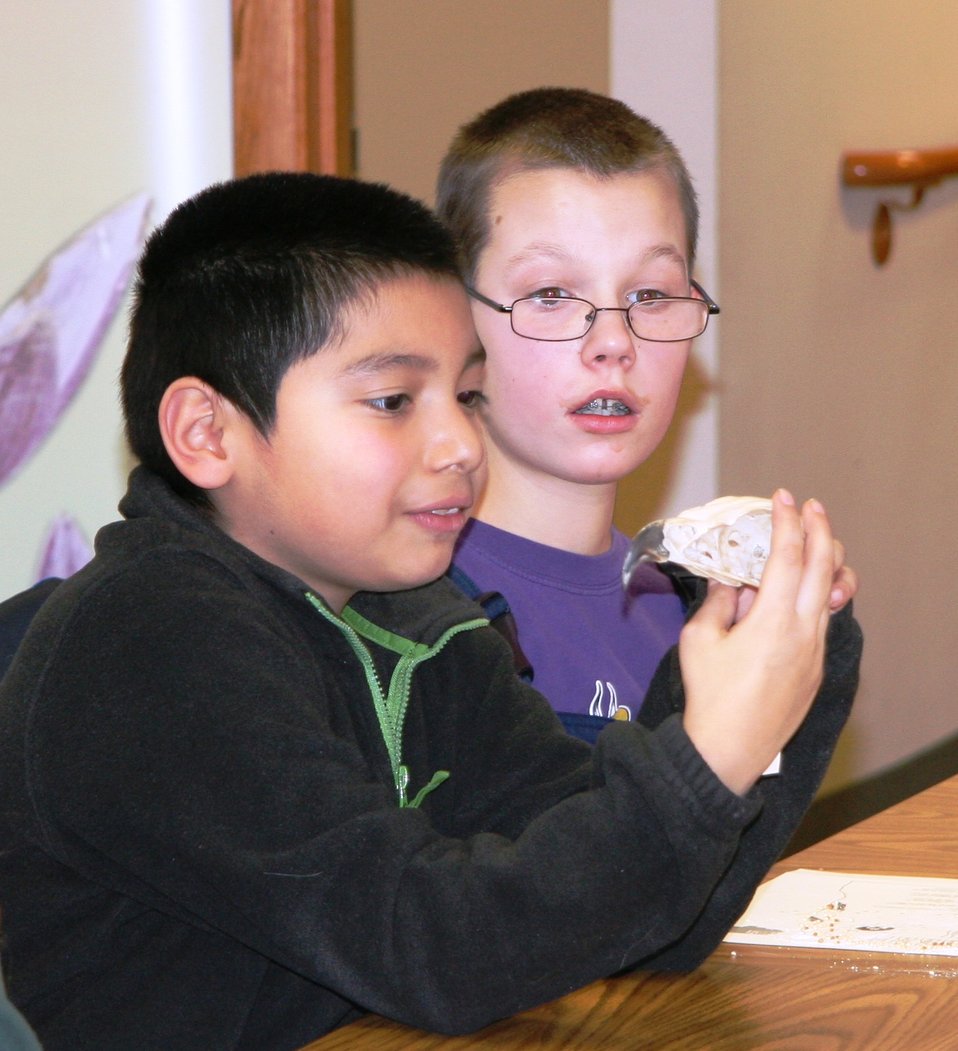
Checking out an Eagle Skull

Two young boys check out a museum specimen eagle skull and the extra large orbitals the species needs for spotting prey.